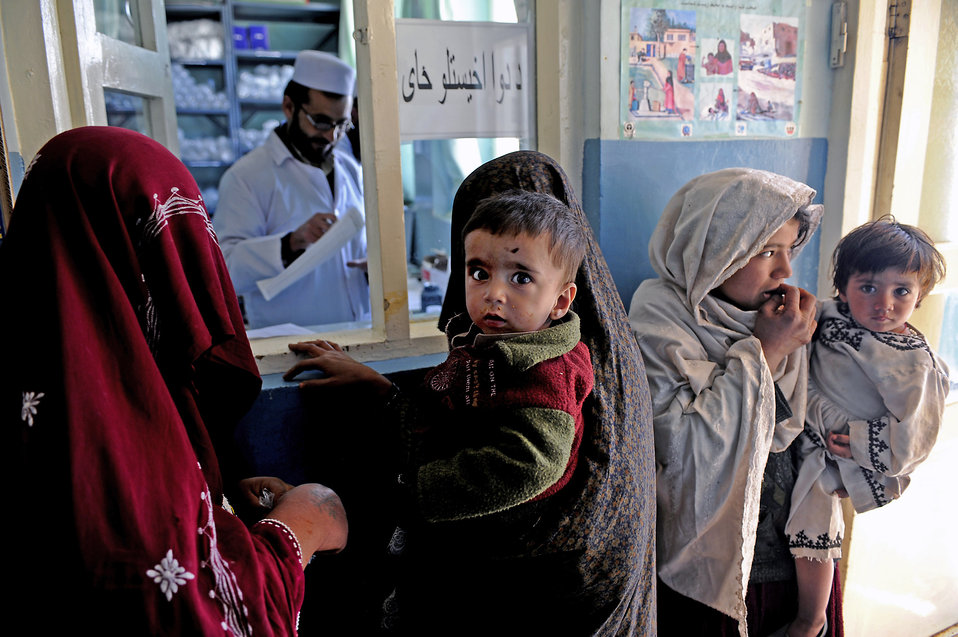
Providing reconstructive assistance, hope to Afghan homeland

Local Afghans wait for prescriptions April 13 at the Sayed Karam Female Provider Quarters in Guardez City, Afghanistan.